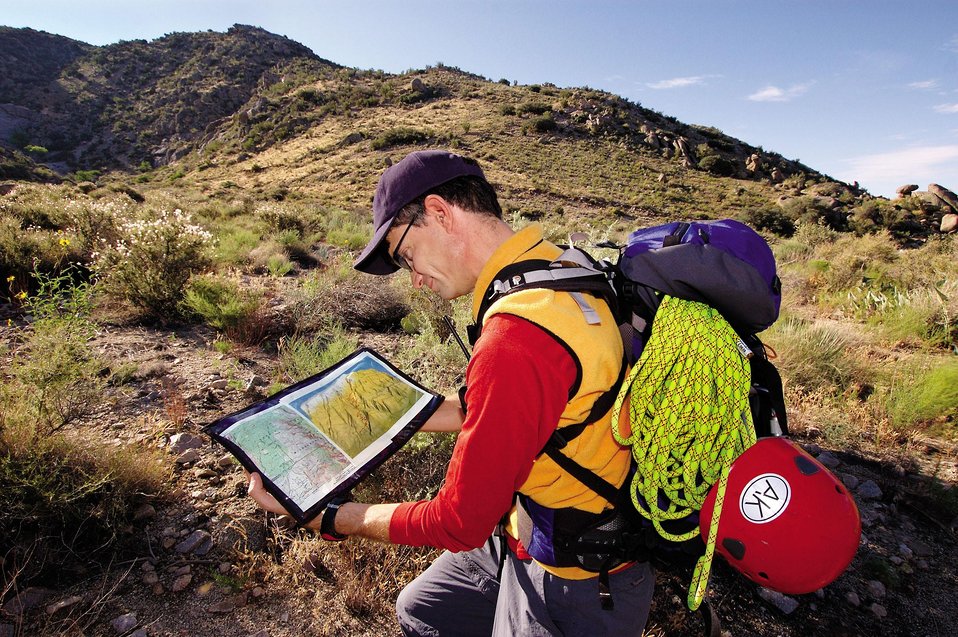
SANDIA RESEARCHER LOOKS AT A SAR MAP AND A STANDARD TOPOGRAPHIC MAP USED IN SEARCH AND RESCUE MISSIONS.

RADAR ORIGINALLY DEVELOPED FOR MILITARY SURVEILLANCE AND RECONNAISSANCE APPLICATIONS, RAPID TERRAIN VISUALIZATION (RTV) PRECISION MAPPING SYNTHETIC APERATURE RADAR (SAR) DATA WAS USED FOR THE FIRST TIME IN NOVEMBER, 2003, BY THE ALBUQUERQUE MOUNTAIN RESCUE COUNCIL TO FIND AND RESCUE A HIKER STRANDED AT DARK IN THE SANDIA MOUNTAINS IN NM. SAR EXPERTS AT SANDIA SAY THE SAME TECHNOLOGY COULD MAP OTHER MOUNTAINOUS TERRAIN AROUND THE COUNTRY AND BE USED IN SEARCH AND RESCUE MISSIONS.